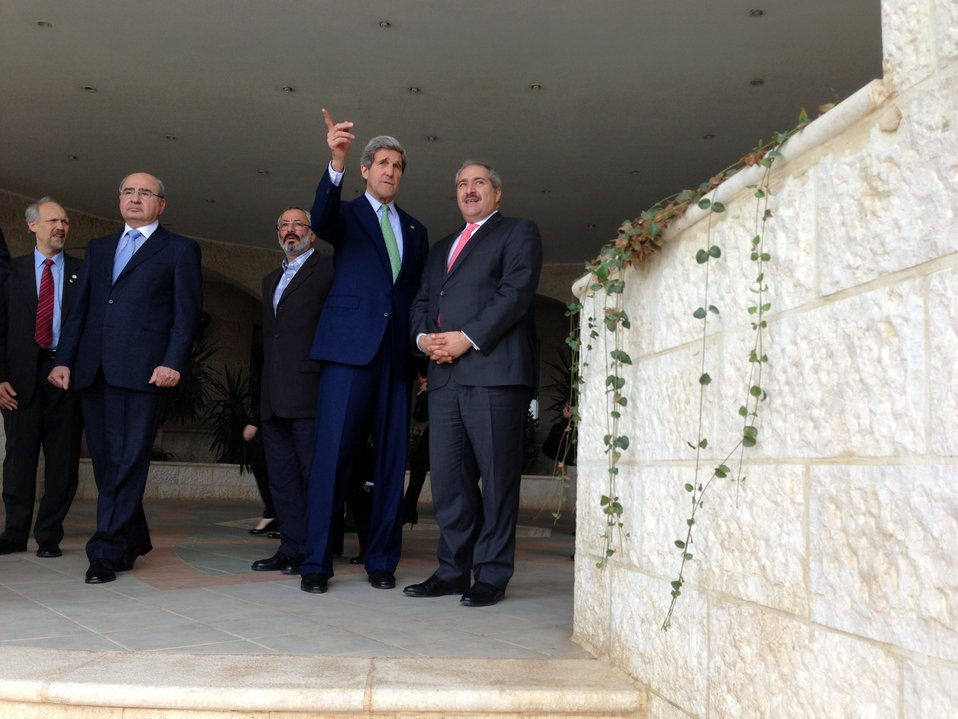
Secretary Kerry and Jordanian Foreign Minister Judeh Survey Jordan's Landscape

U.S. Secretary of State John Kerry and Jordanian Foreign Minister Nasser Judeh survey the Jordanian landscape following their meeting and lunch at the Ministry of Foreign Affairs in Amman on March 23, 2013.